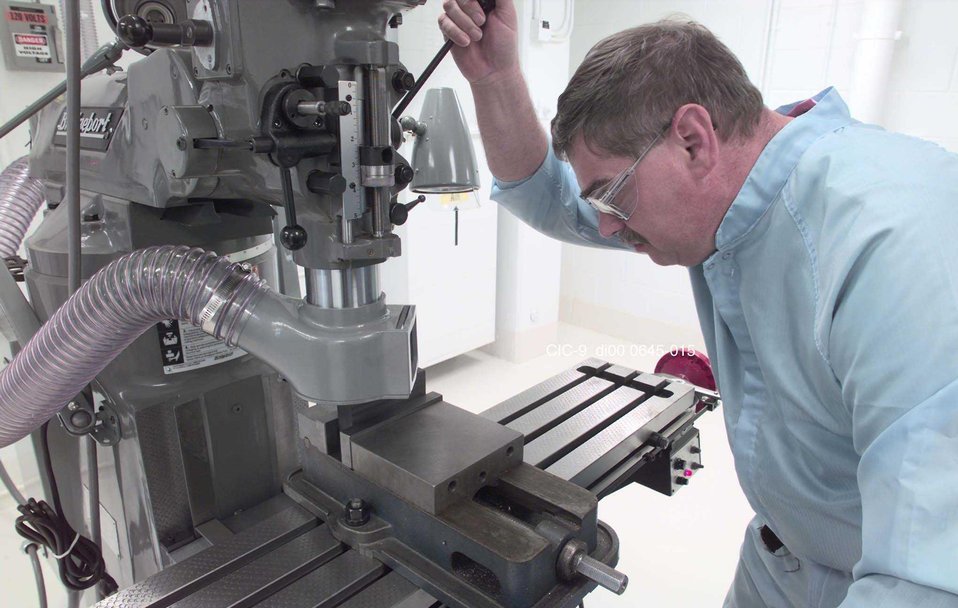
LANL SCIENTIST MACHINES THE SURFACE ON A BERYLLIUM SAMPLE.

THE BERYLLIUM TECHNOLOGY FACILITY AT DOE'S LOS ALAMOS NATIONAL LABORATORY RECEIVED A DEFENSE PROGRAMS AWARD OF EXCELLENCE FROM THE DEPARTMENT'S NATIONAL NUCLEAR SECURITY ADMINISTRATION. THIS FACILITY IS THE FIRST STATE-OF-THE-ART FACILITY IN THE U.S. DESIGNED SPECIFICALLY FOR WORKING WITH BERYLLIUM.